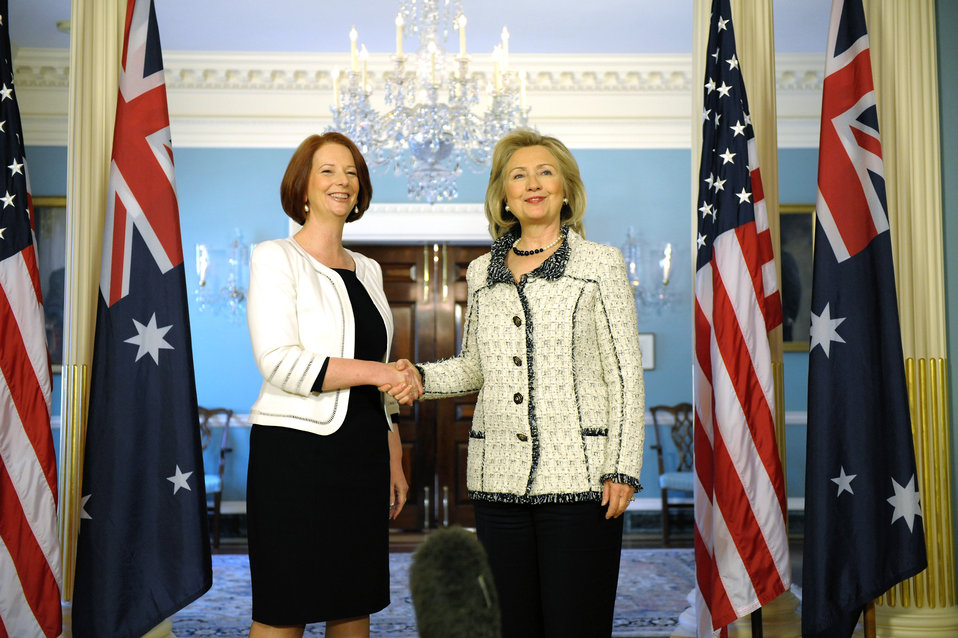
Secretary Clinton Shakes Hands With Australian Prime Minister Gillard

U.S. Secretary of State Hillary Rodham Clinton shakes hands with Australian Prime Minister Julia Gillard after their bilateral meeting at the U.S. Department of State in Washington, D.C., on March 8, 2011.